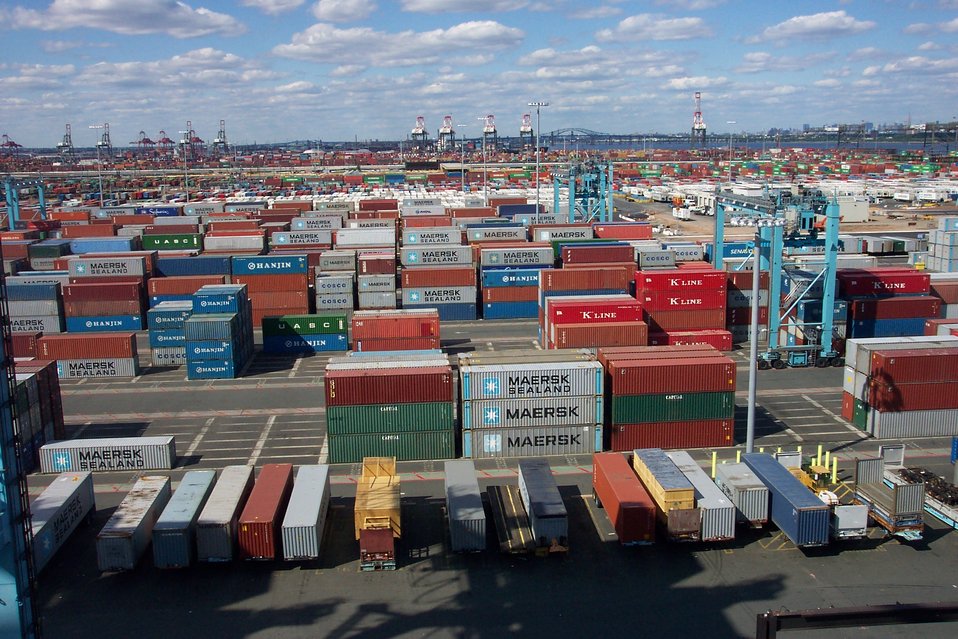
Thousands of shipping containers at the terminal at Port Elizabeth, New Jersey.